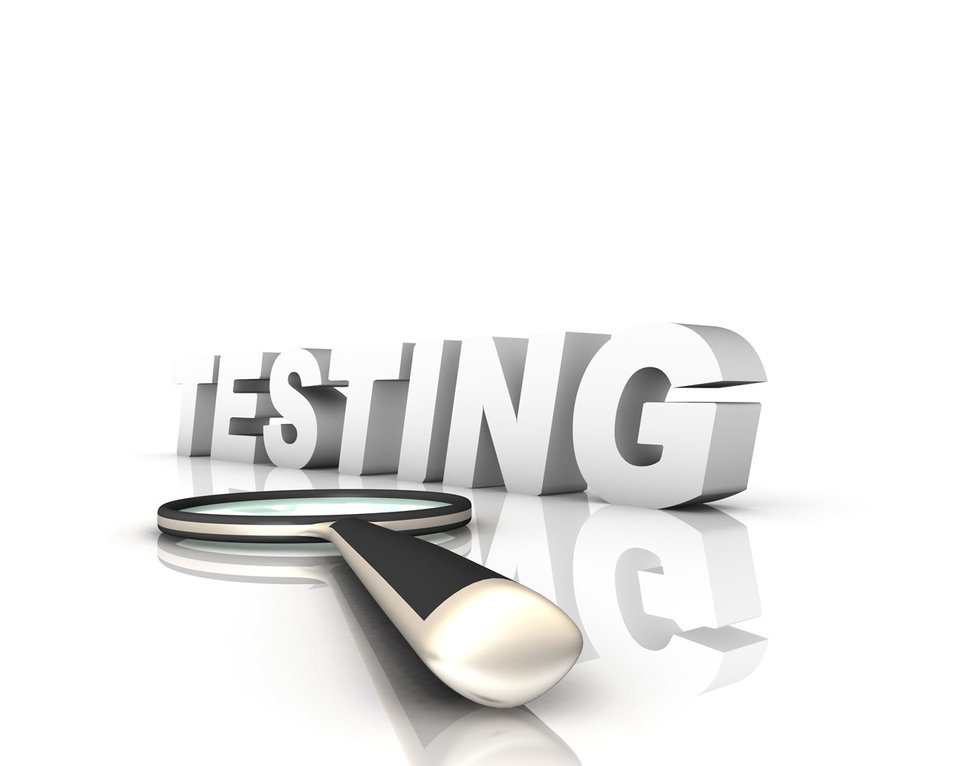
Testing with magnifier

3d magnifier with black handle and chrome.